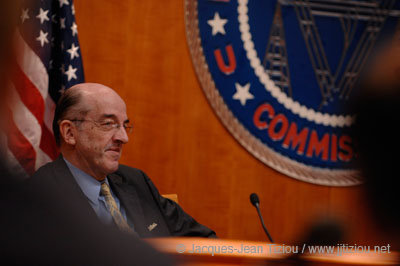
Michael Copps 2